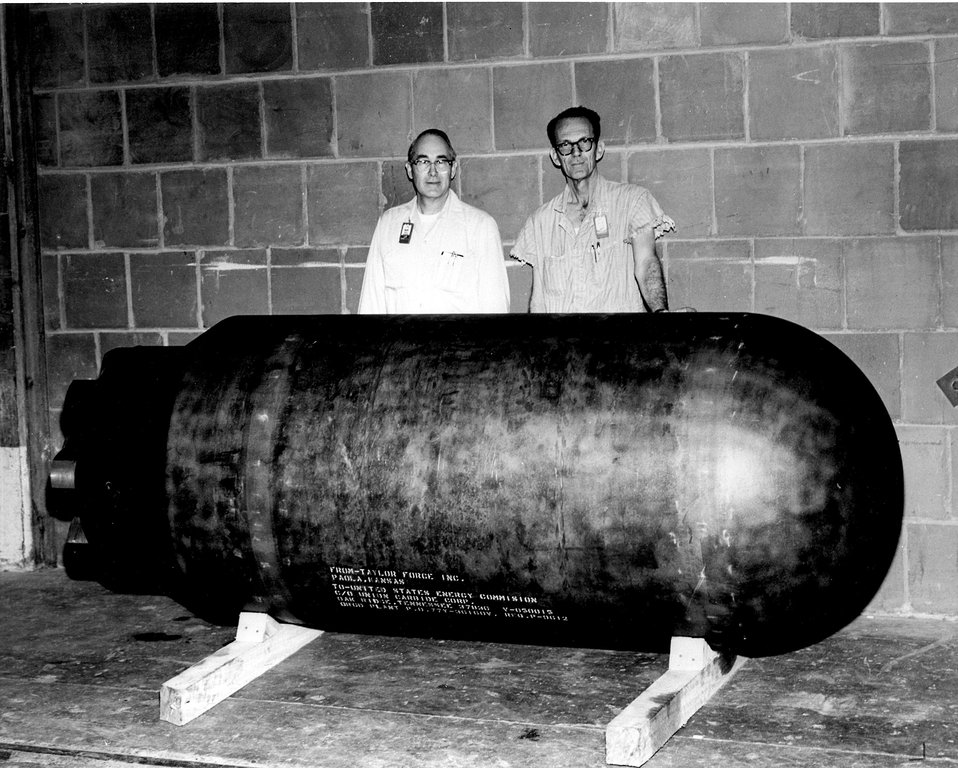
Photograph (one of three) of a water-cooled reactor vessel model that was deliberately flawed and then put under pressure to the point of failure to obtain data. c. 1973